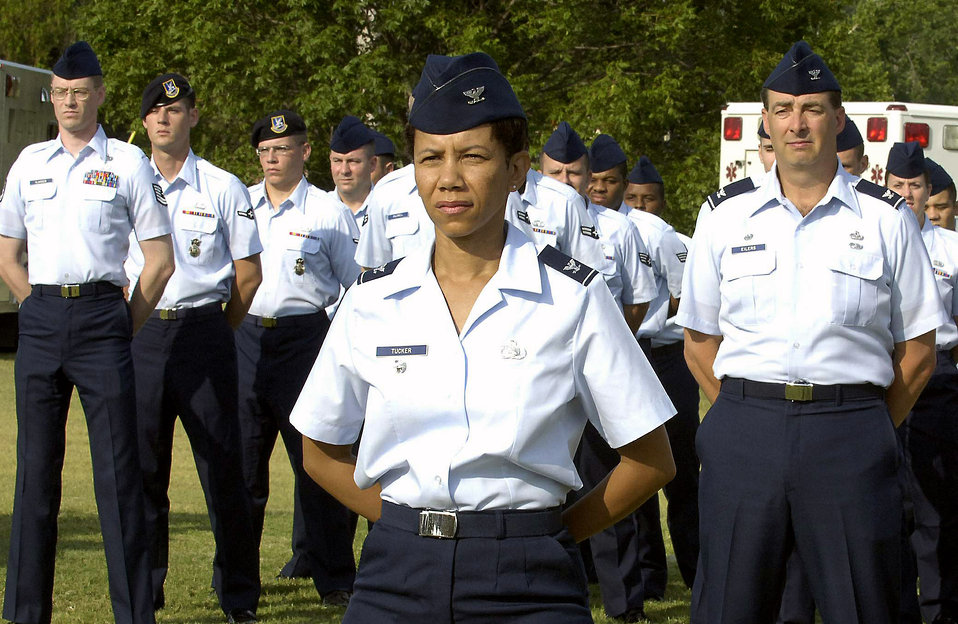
Change of command

Col. Mona Lisa Tucker, the 72nd Air Base Wing vice commander, stands at ease during Col. Allen Jamerson's assumption of command ceremony July 18 of the wing at Tinker Air Force Base, Okla. The wing has African Americans currently serving in its top three leadership positions.